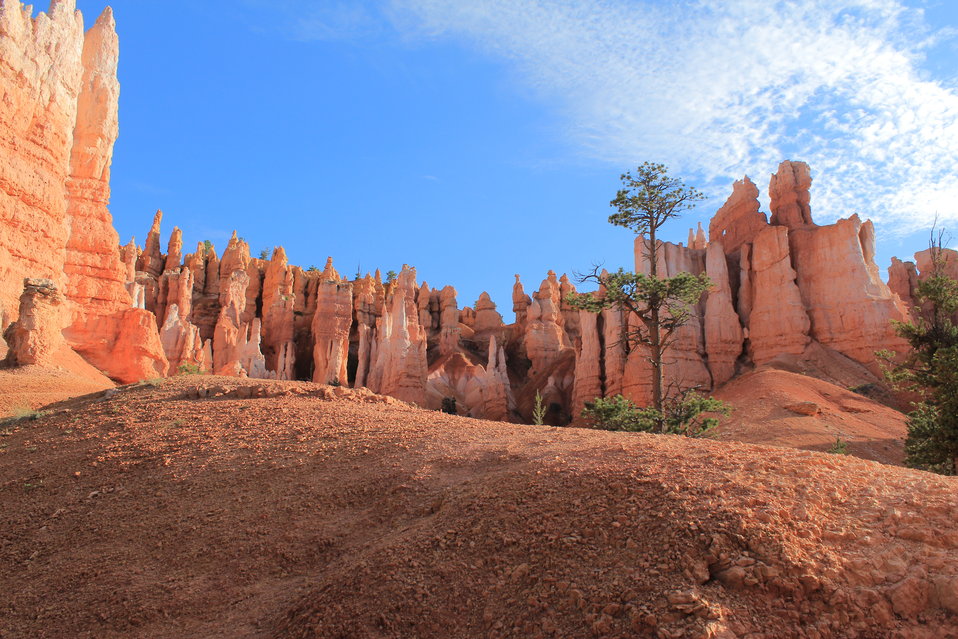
Bryce Canyon National Park

Colorful limestone hoodoos are offset by the vibrant Utah sky.

Location: Bryce Canyon NP

Credit: Jaclyn Kircher / USFWS

Photo Contest Entry #25